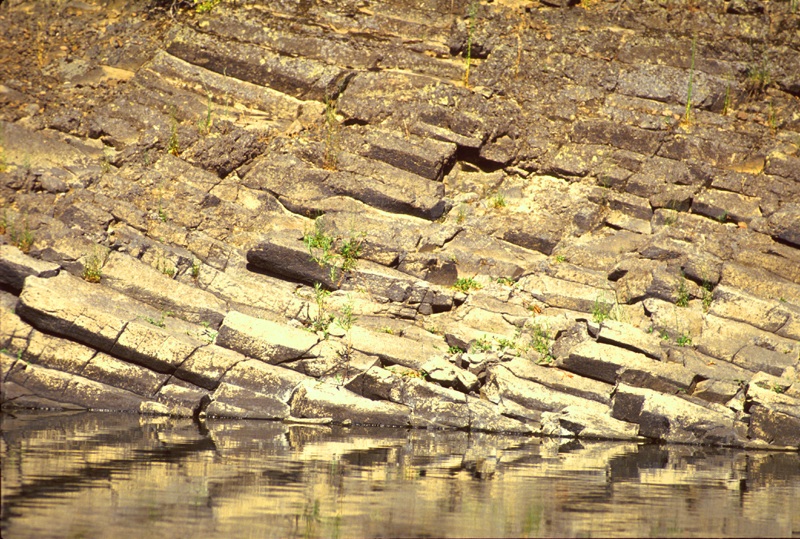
Columnar Basalt Cottonwood Field Office Upper Columbia Salmon Clearwater District